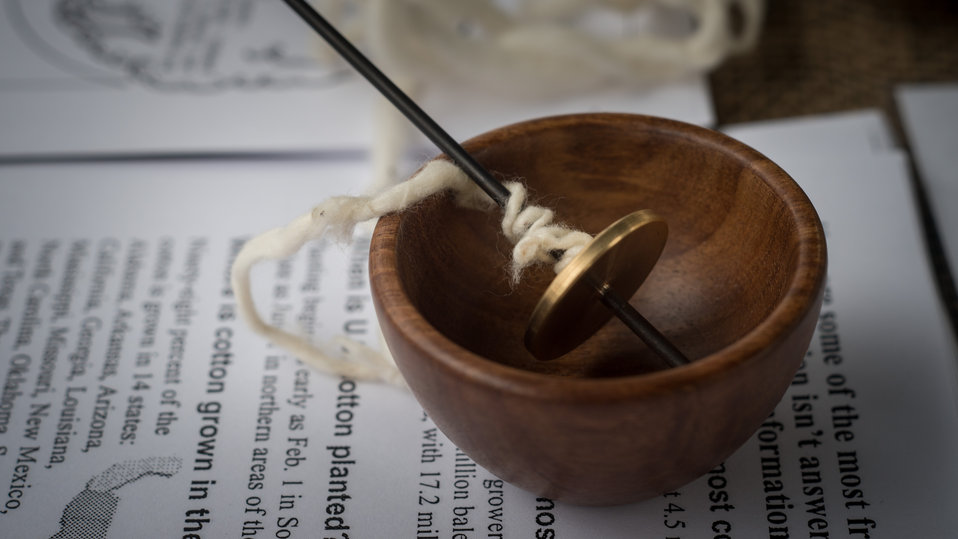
A hand spindle used to spin cotton fiber into thread, on display at the U.S. Department of Agriculture (USDA) farmers markets and Harvest Festival at the USDA Whitten Building east parking lot in Washington, DC, on Friday, November 22, 2013.